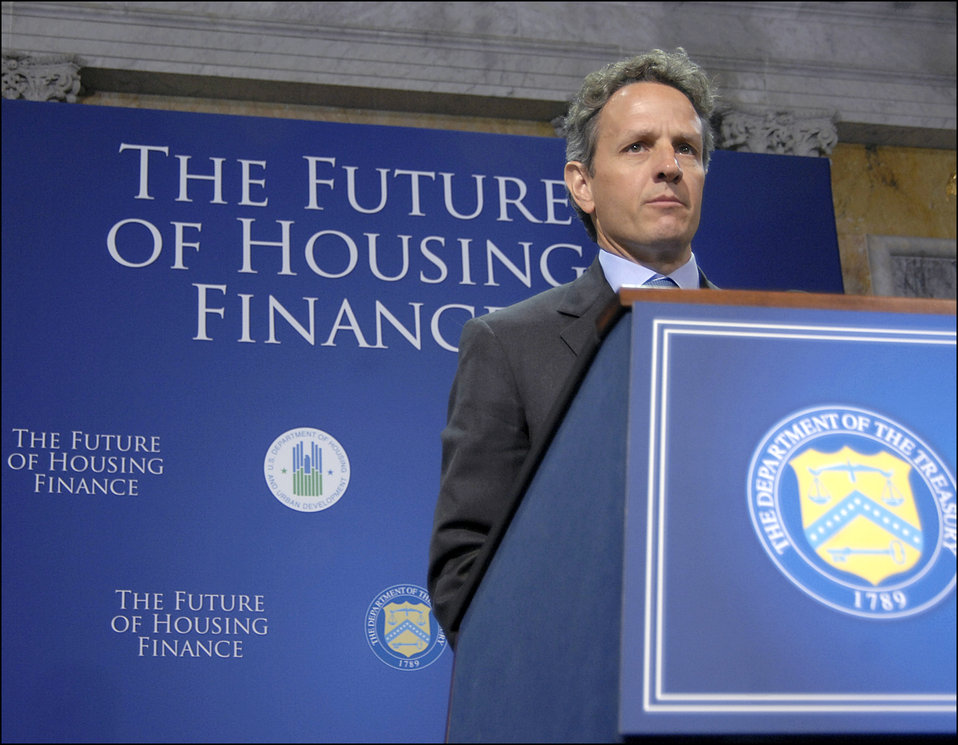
Conference on the Future of Housing Finance, 08/17/2010

“The failures that produced the system we have today were bi-partisan. The solution must be as well. This is a test for Washington. The stakes are high. The housing industry supports millions of jobs. For many Americans, their home is their largest financial asset,' said Treasury Secretary Geithner in his opening remarks at the Conference on the Future of Housing Finance.